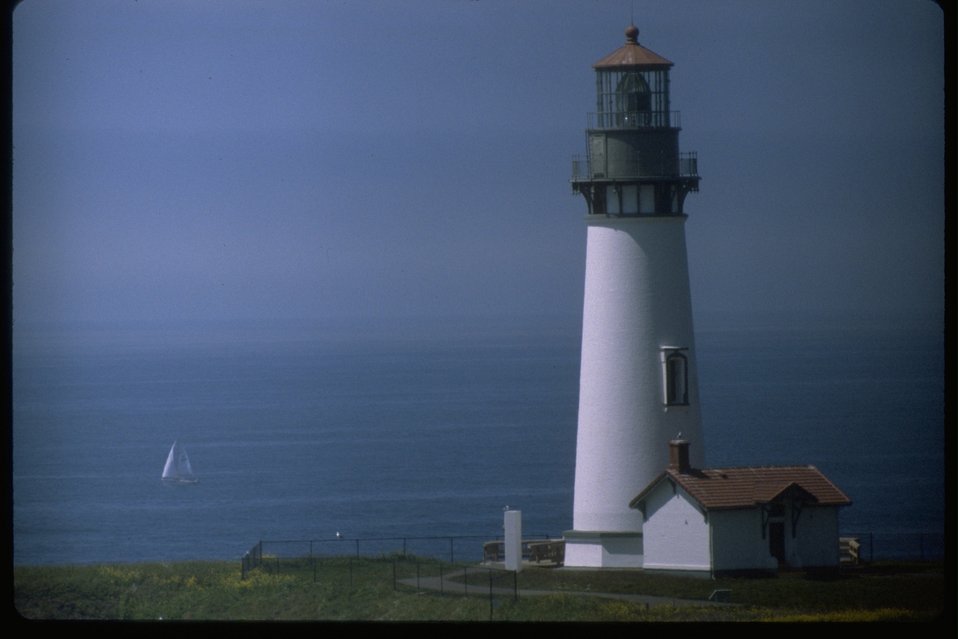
Horizontal shot of Yaquina Head lighthouse with a sailboat off shore.